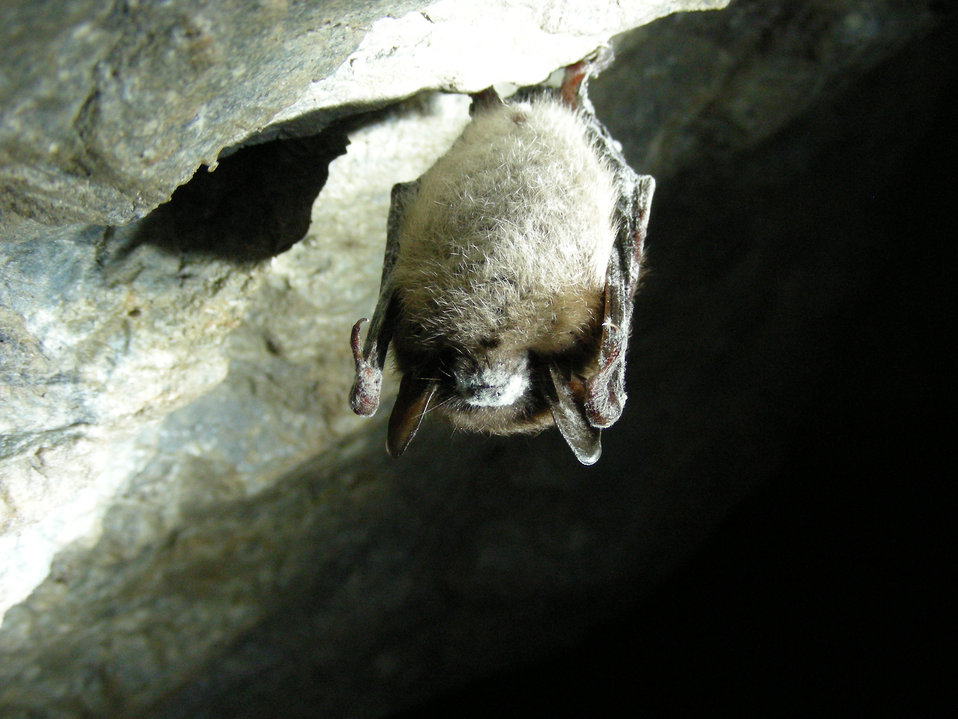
Little brown bat affected by White-nose Syndrome

Little brown bat with white-nose syndrome in Greeley Mine, Vermont, March 26, 2009